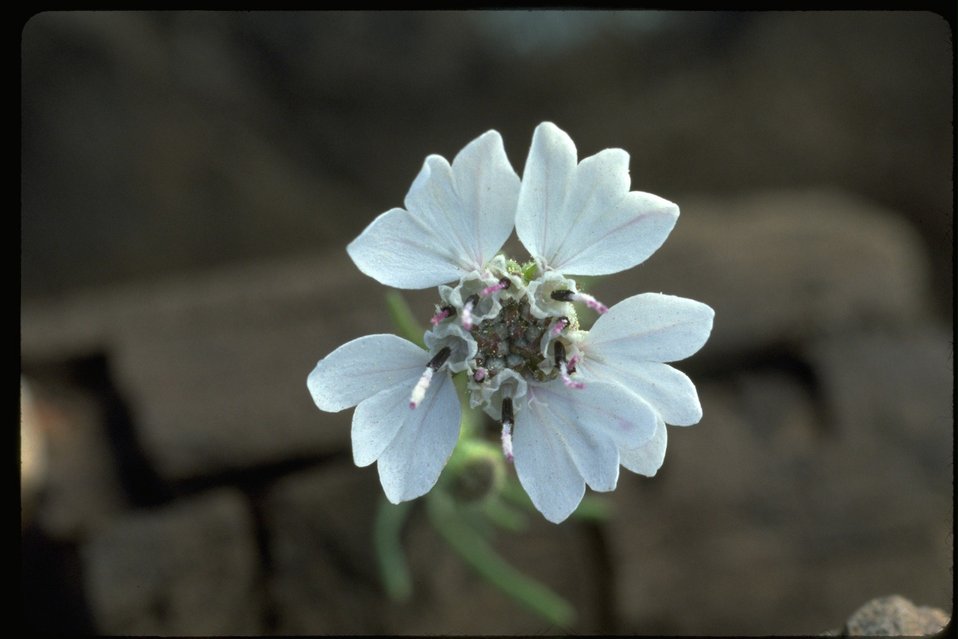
Close up shot of wild onion.